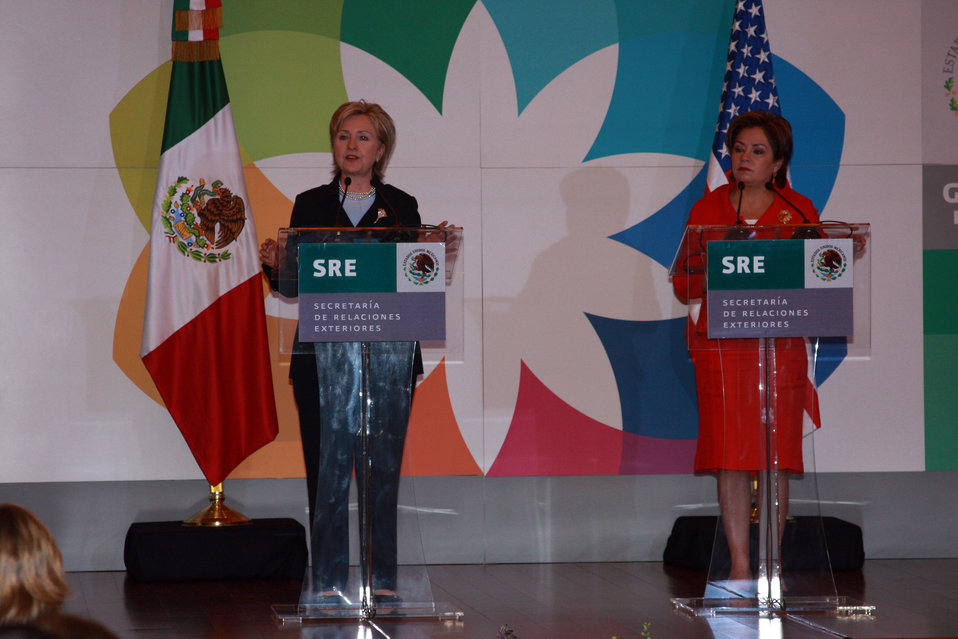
Secretary Clinton and Mexican Foreign Minister Press Conference

U.S. Secretary of State Hillary Rodham Clinton participates in a joint press conference with Secretary of Foreign Affairs Patricia Espinosa at the Mexican Foreign Ministry,Mexico City, March 25, 2009.